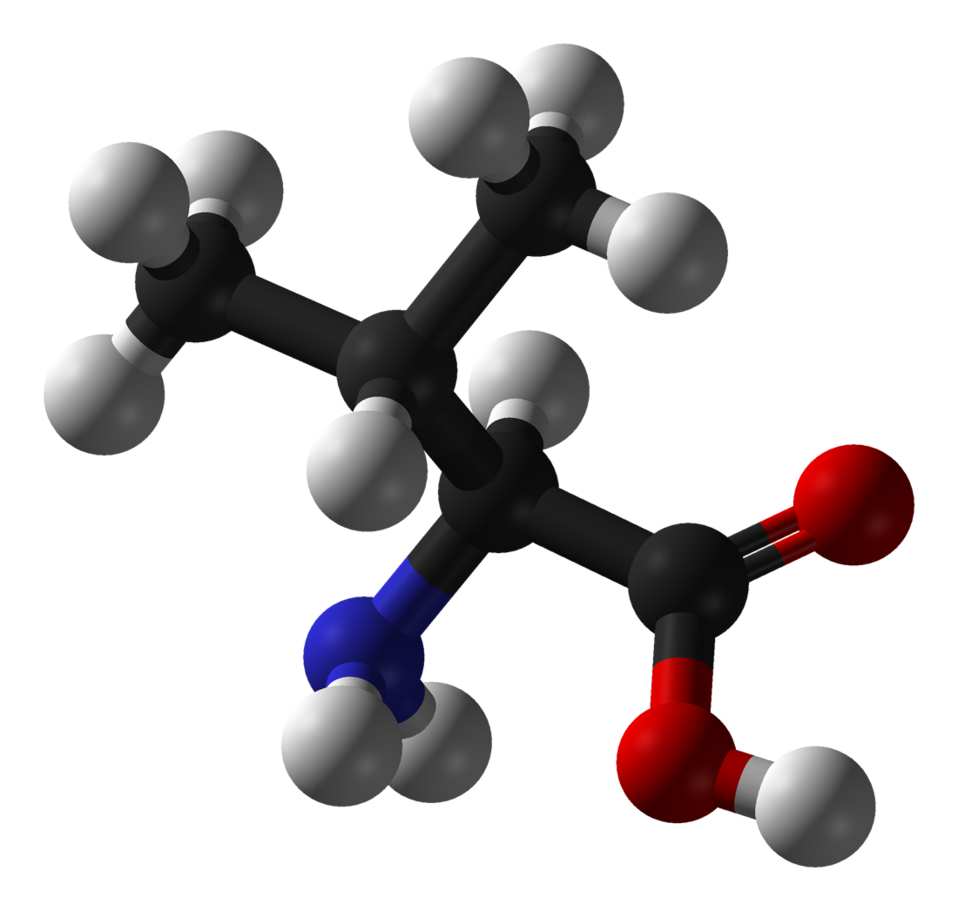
L-valine-3D-balls